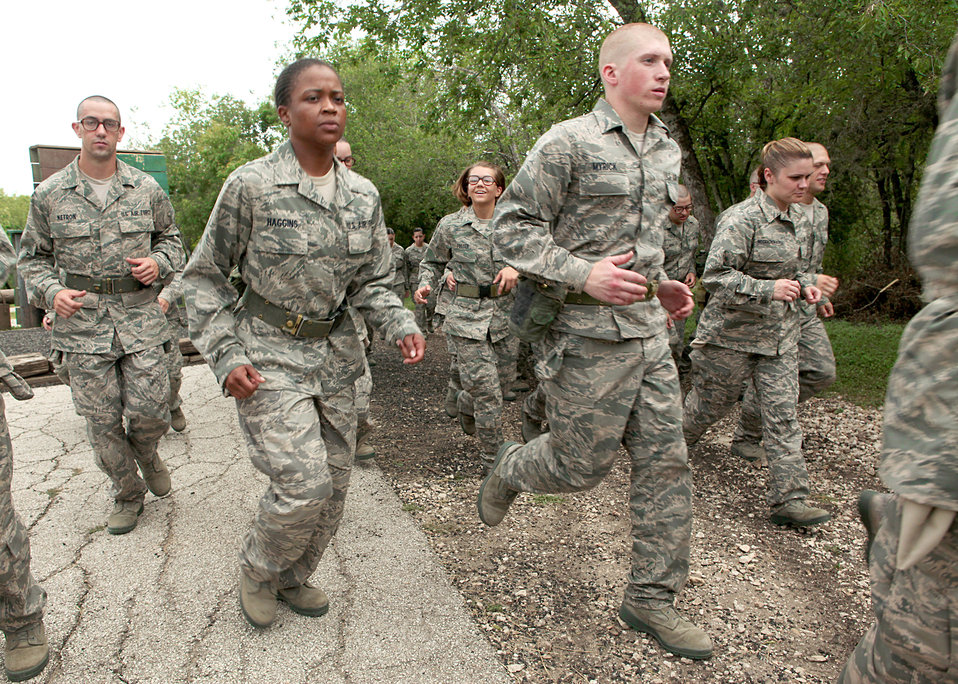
Trainees take on confidence course

Air Force Basic Military Training trainees from the 320th Training Squadron move to the next obstacle while running the confidence course June 30, 2010, at Lackland Air Force Base, Texas. The 737th Training Group trains approximately 35,000 Airmen each year. More than seven million Airmen have completed BMT since 1946.